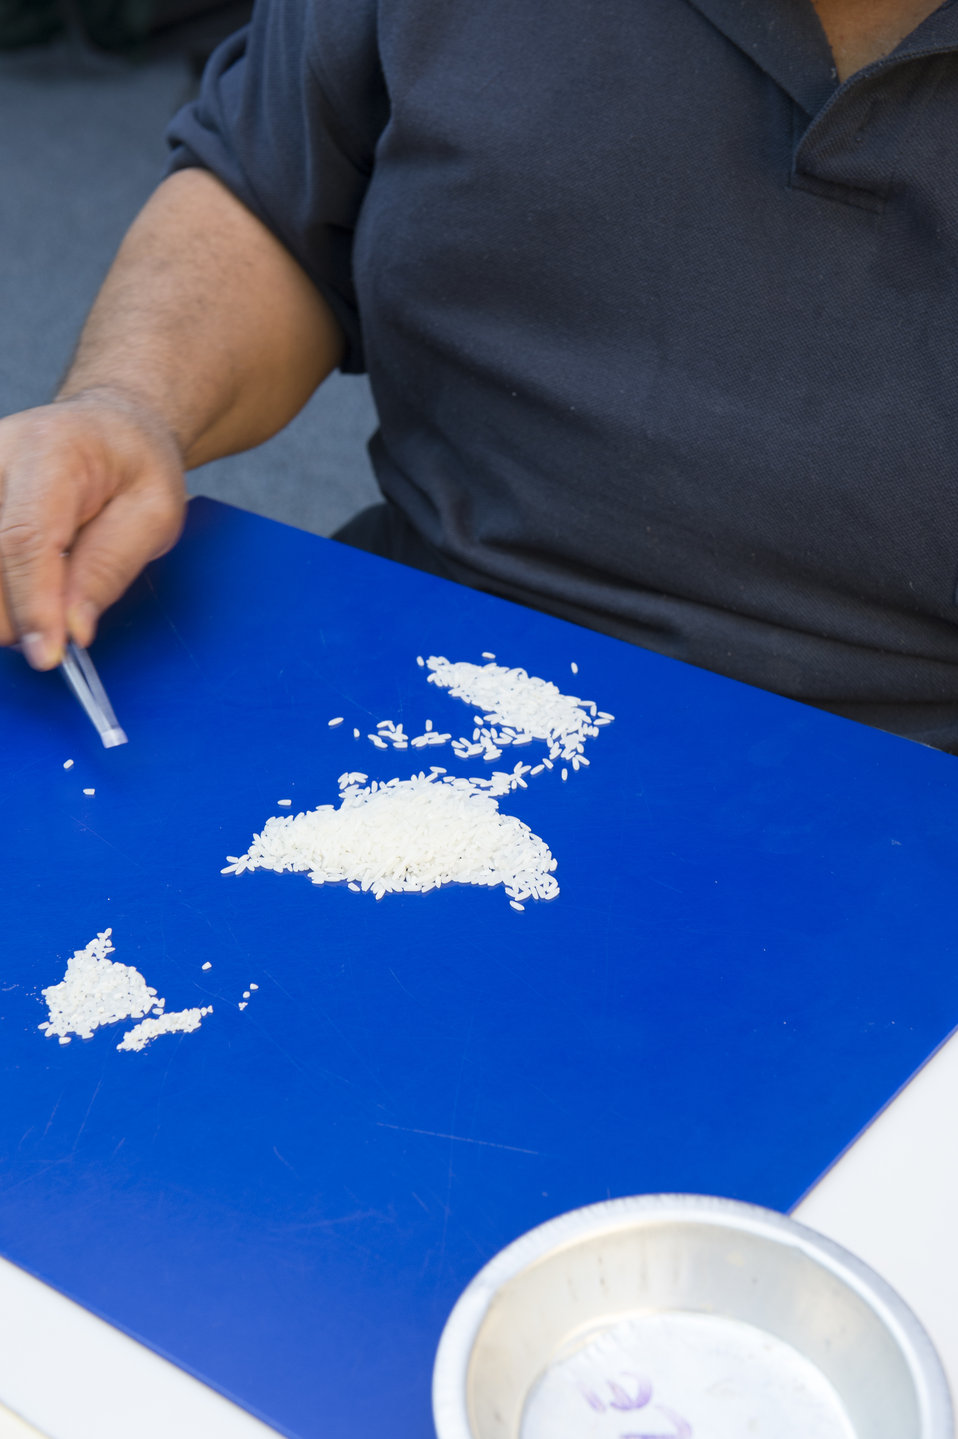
U.S. Department of Agriculture (USDA) Grain Inspection, Packers and Stockyards Administration (GIPSA) Federal Grain Inspection Service (FGIS) employee examines rice samples at the FGIS inspection laboratory in New Orleans, LA on Monday, Nov. 18, 2013.